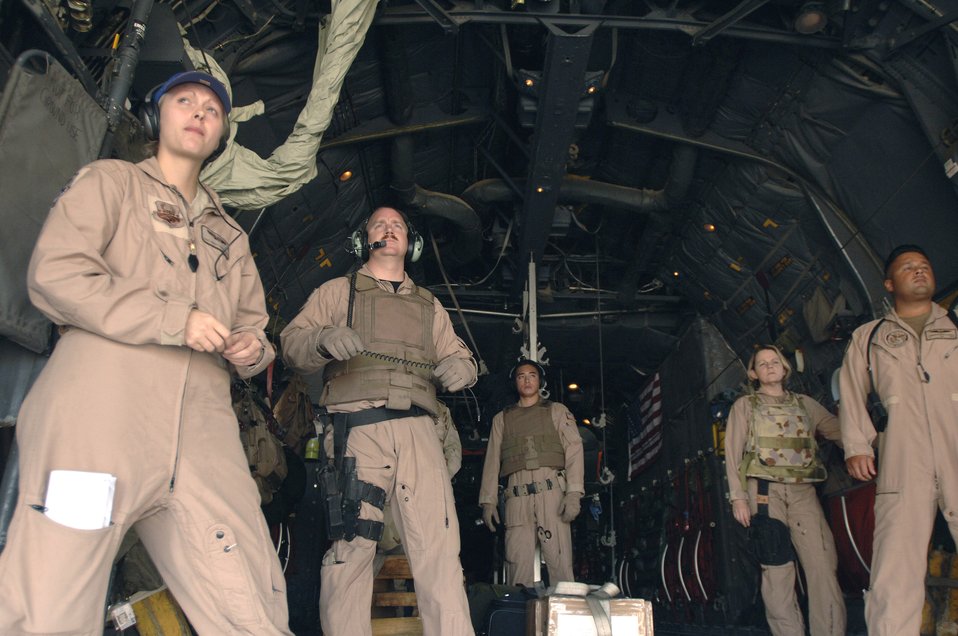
Aeromedical evacuation mission

Flight medic Staff Sgt. Kristy Vandergriff and other medics and a crewchief wait for the arrival of four patients to board the C-130 Hercules during a stop in northern Iraq. One this day, 13 patients were picked up and transported to waiting medical facilities through out the U.S. Central Command area of responsibility. The Airmen are with the 379th Expeditionary Aeromedical Evacuation Squadron.